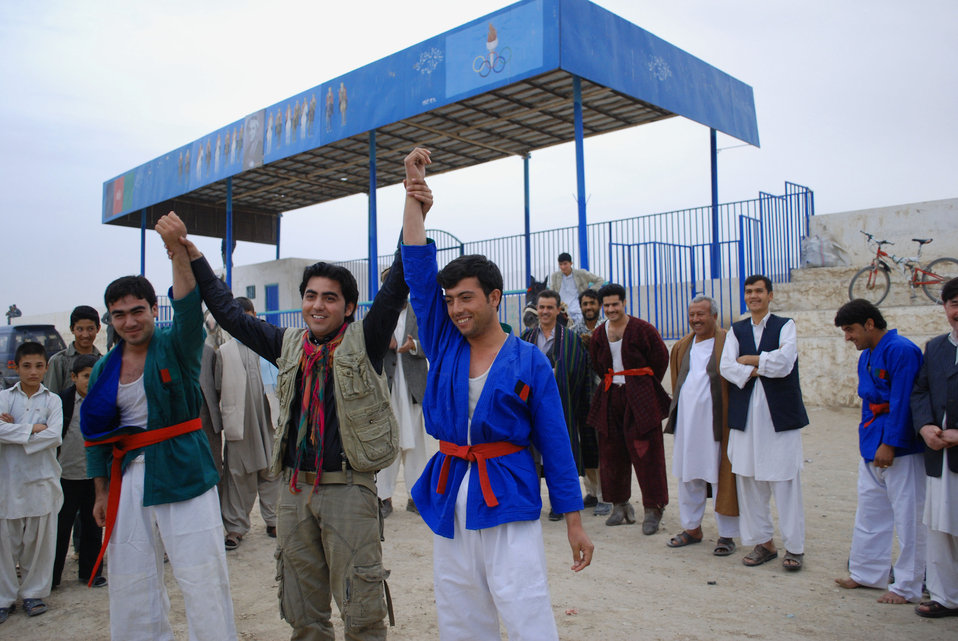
'On the Road' in Balkh Province